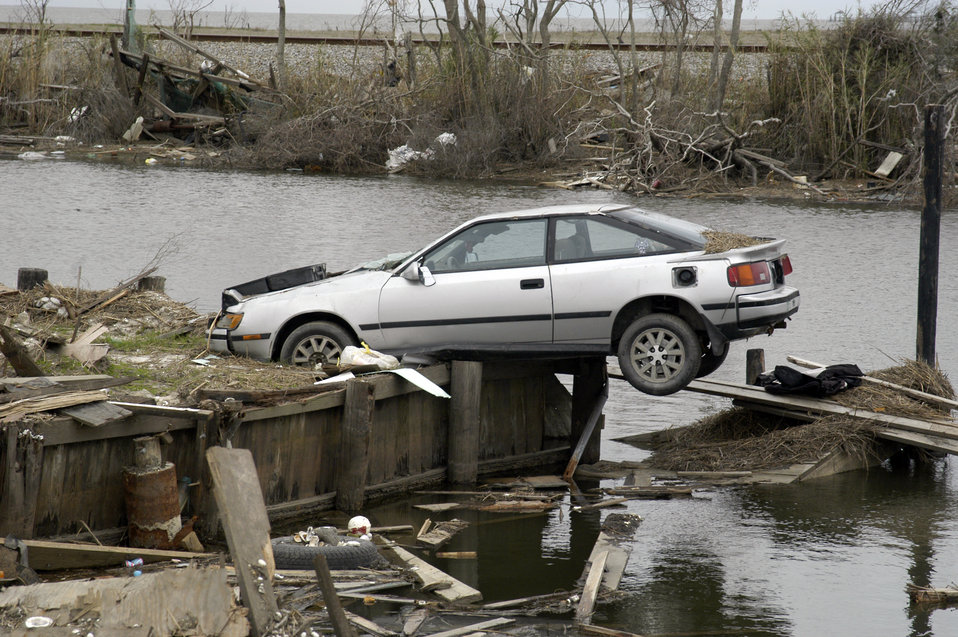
A car was washed away by the 20-foot storm surge of Hurricane Katrina and thrown onto a jutting pier. Hurricane Katrina was the 6th strongest hurricane in U.S. history and the 5th deadliest. Katrina made landfall on Monday morning, August 29, 2005 as a Category 3 hurricane with sustained winds of 125 mph with over a 20-foot storm surge. Katrina caused catastrophic damage over 90 thousand square miles across Louisiana with an estimated $75 billion dollars in damage. The total economic impact to the Gulf Coast was estimated at over $150 billion. 80% of New Orleans, LA, was underwater with some areas more than 20 feet deep. The U.S. Army Corps of Engineers (USACE) under the auspices of FEMA was the lead service in providing assistance to the citizens of Louisiana. The U.S. Department of Agriculture (USDA) supplied emergency food aid, emergency loan assistance to farmers and home owners, and USDA personnel from around the nation volunteered their time and muscle to aid in the recovery operations.